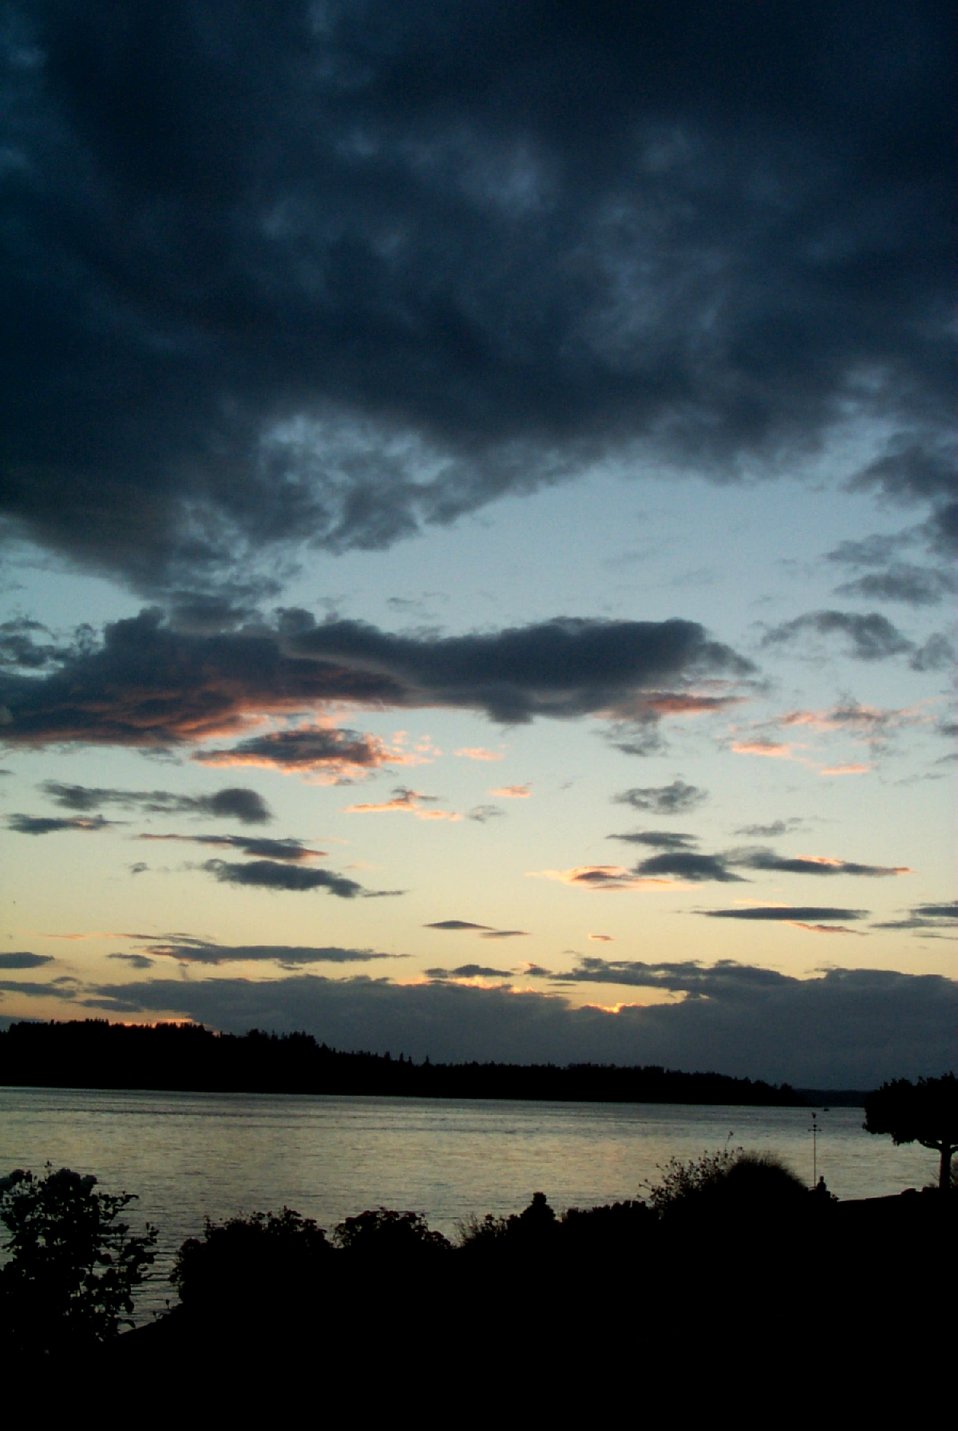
Looking southwest across Gig Harbor to Fox Island.